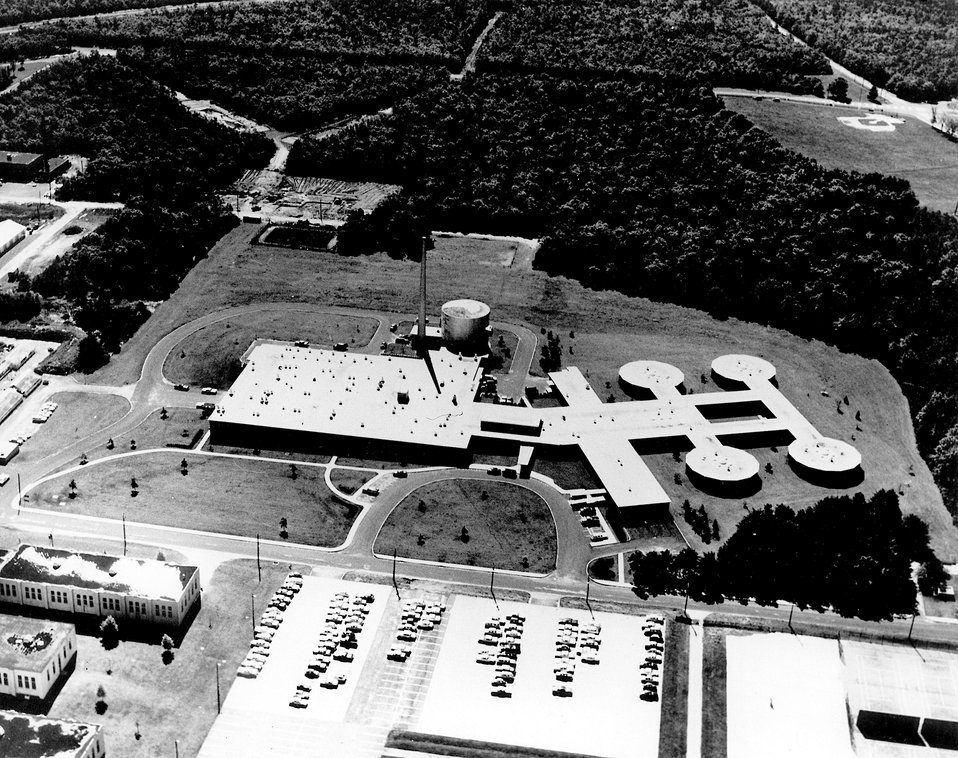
UPTON, LONG ISLAND, NEW YORK.. .Medical Research
Center, Brookhaven National Laboratory, New York.